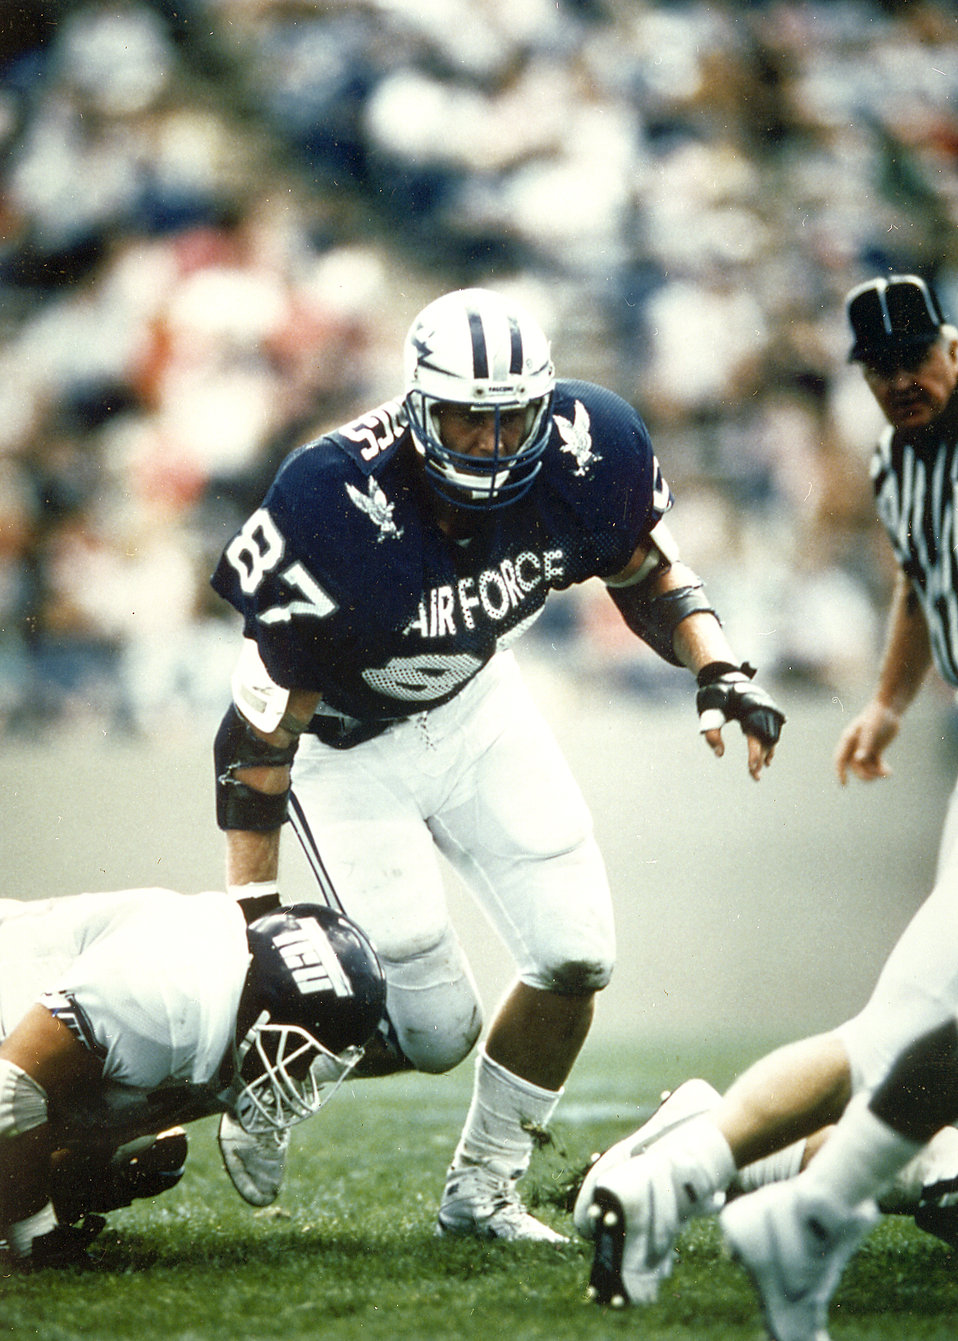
Chad Hennings elected to College Football Hall of Fame

Former Air Force great Chad Hennings, a 1988 graduate of the Air Force Academy, was elected to the College Football Hall of Fame on May 16, 2006. He was considered one of college football's great defensive linemen of his era, a unanimous first-team All-America selection in 1987 who received the Outland Trophy as the nation's top interior lineman. As a pro, he embarked on a nine-year NFL career with the Dallas Cowboys that brought him three Super Bowl titles.